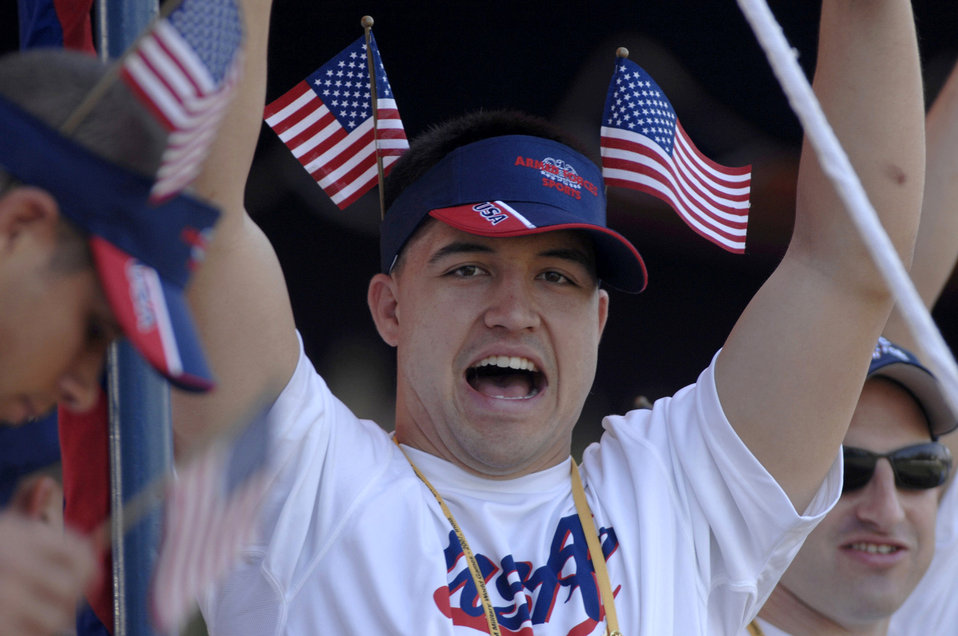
4th CISM World Military Games

Mat Lewis cheers the U.S. military women's soccer team as they meet the Democratic Peoples Republic of Korea team during the Military World Games' women's soccer competition in Hyderabad, India, Oct. 14. DPR Korea defeated the U.S. team 4-0. The Conseil Internationale du Sport Militaire's Military World Games event is the largest international military Olympic-style event in the world. In this year's fourth edition of the games, 103 countries and more than 5,000 athletes are competing Oct. 14 to 21 in boxing, diving, soccer, handball, judo, military pentathlon, parachuting, sailing, shooting, swimming, volleyball and track and field. The purpose of the Military World Games is to promote